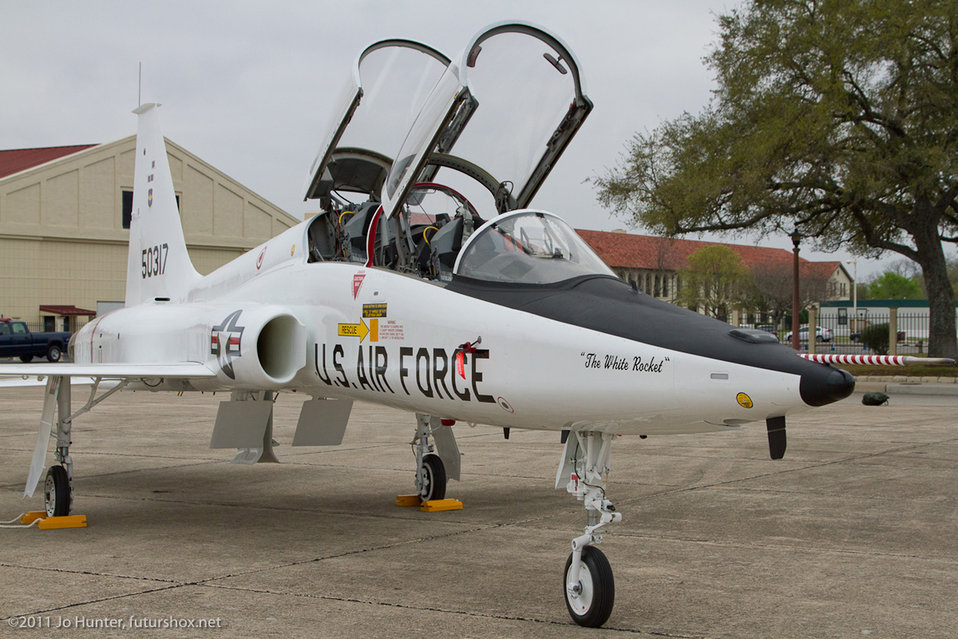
T-38

This T-38 Talon, on the flightline March 17, 2011, at Randolph Air Force Base, Texas, has been painted with a special commemorative color scheme, giving the plane an appearance similar to its original 1961 look.